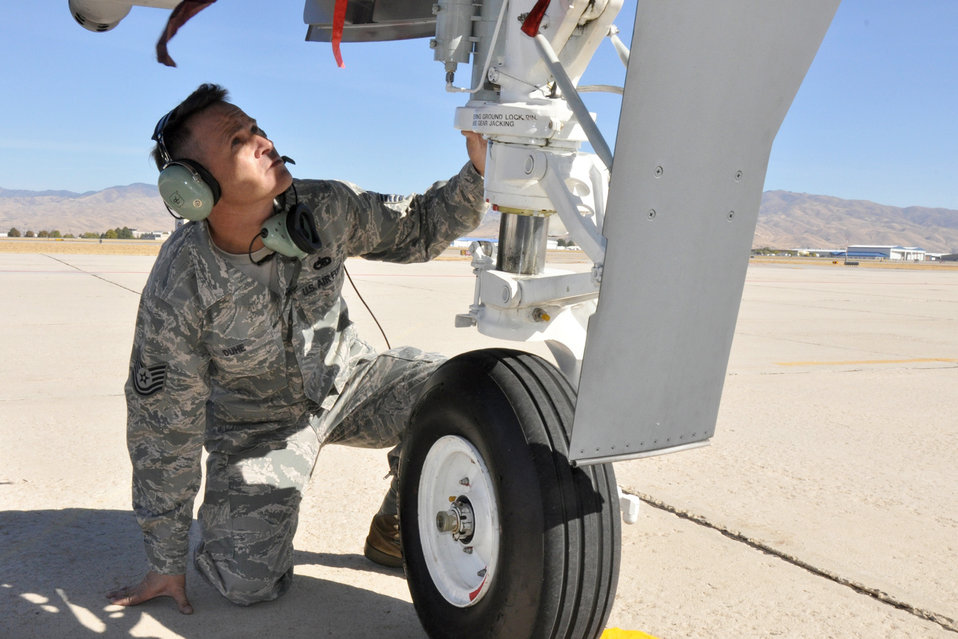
Hawgsmoke 2010

Tech. Sgt. Chris Duhe performs a post-flight inspection of an A-10 Thunderbolt II Oct. 13, 2010, at Gowen Field in Boise, Idaho. Sergeant Duhe is a crew chief with the Air Force Reserve Command's 717th Aircraft Maintenance Squadron at Barksdale Air Force Base, La.